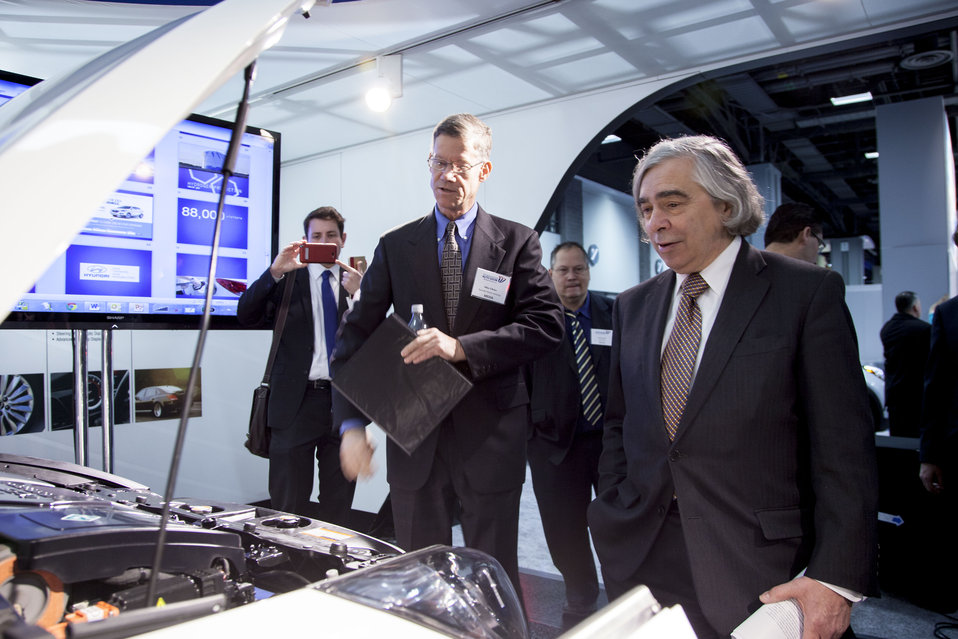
Secretary Moniz looks under the hood of the Hyundai Tucson fuel cell vehicle, which will be available in California in spring 2014. The Energy Department has significantly contributed to the foundational technology for transportation fuel cells, helping reduce the cost by 50 percent since 2006. The Tucson fuel cell vehicle will be the first mass-market hydrogen vehicle available in the U.S.